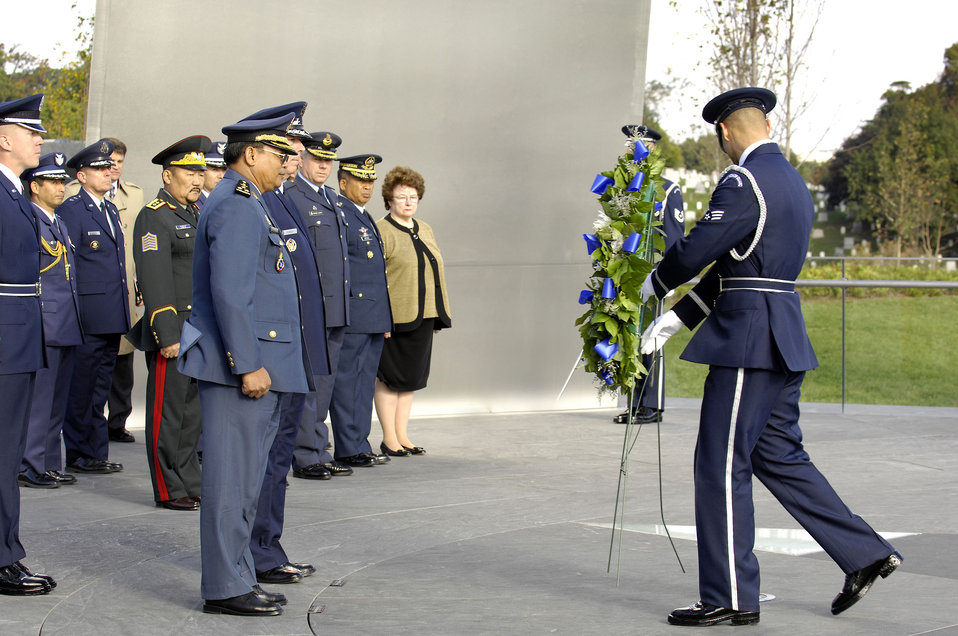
Air chiefs participate in wreath-laying ceremony

An Airman from the U.S. Air Force Honor Guard presents the wreath at the foreign dignitary arrival and wreath laying ceremony at the Air Force Memorial in Arlington, Va., on Oct. 24. Air Force Chief of Staff Gen. T. Michael Moseley hosted the ceremony for nine Pacific air chiefs visiting Washington. Lt. Gen. Soeung Samnang, Cambodian Royal Air Force commander, represented the Pacific Air Chiefs when he assisted Gen. Moseley during the ceremony.